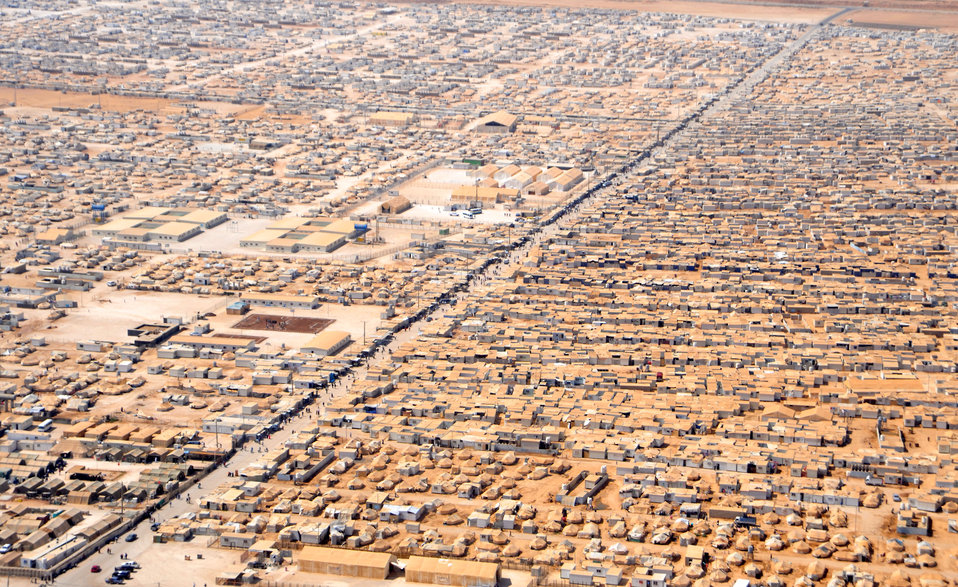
An Aerial View of the Za'atri Refugee Camp

A close-up view of the Za'atri camp for Syrian refugees as seen on July 18, 2013, from a helicopter carrying U.S. Secretary of State John Kerry and Jordanian Foreign Minister Nasser Judeh.